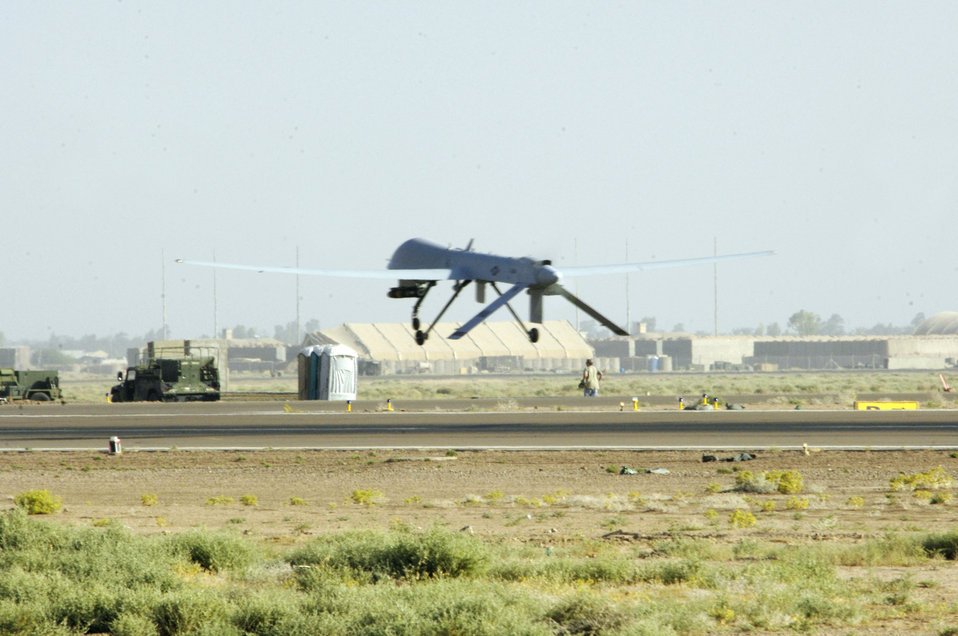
Unmanned engagement

An MQ-1 Predator unmanned aerial vehicle takes off from Balad Air Base, Iraq, on Wednesday, June 14. The Predator can employ two laser-guided Hellfire anti-tank missiles.